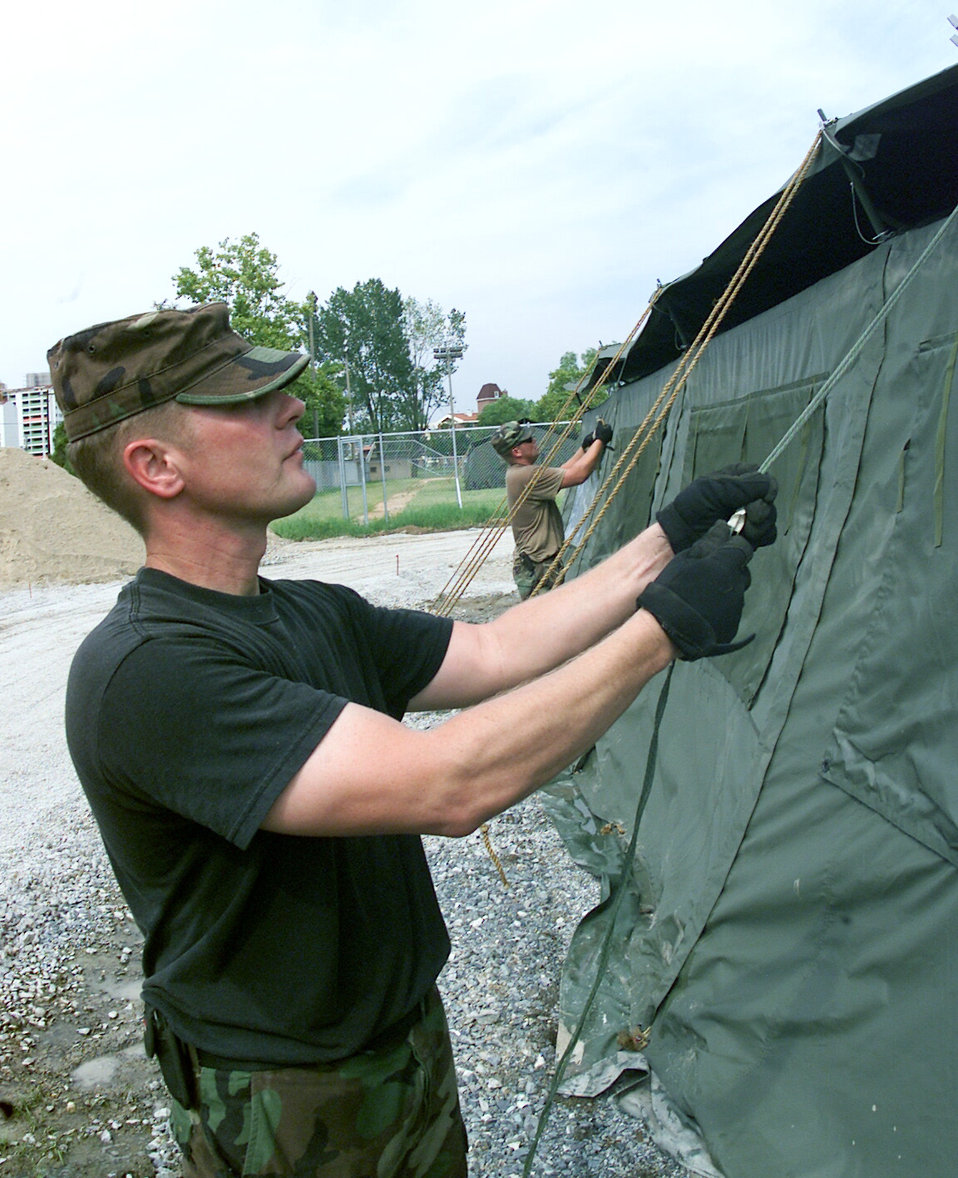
A tents situation

KWANJU AIR BASE, South Korea -- Tech. Sgt. Tony Aquilano prepares tent city here for the 3rd Air Expeditionary Group's arrival. He is deployed from the 554th Red Horse Squadron at Osan Air Base, South Korea.